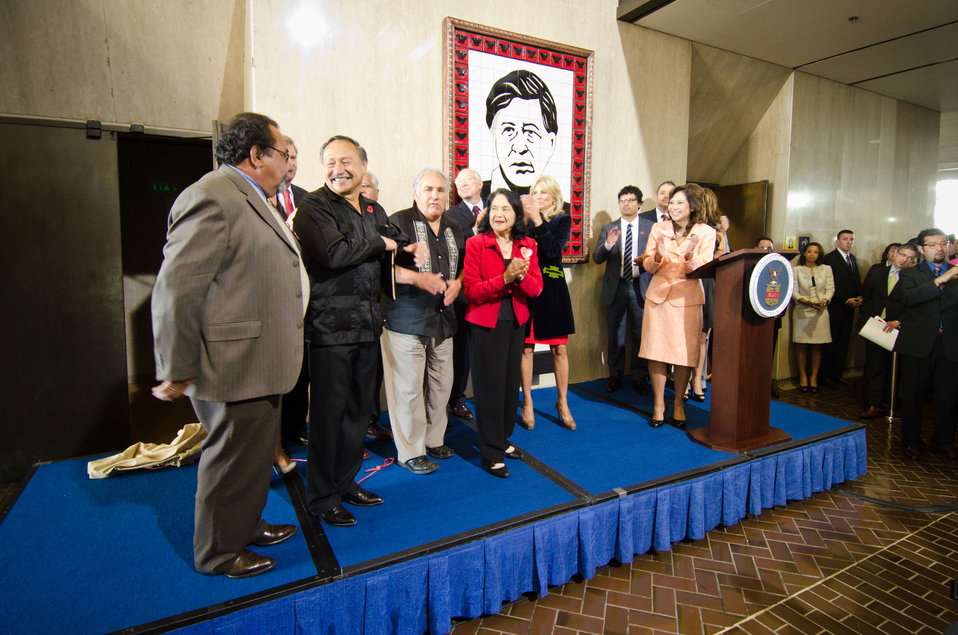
From left: Representative Raul Grijalva, Arizona, Arturo Rodriguez, President, United Farm Workers of America, Reverend Deacon Sal Alvarez, Dolores Huerta, a founding member of the United Farm Workers Union of America, Interior Secretary Ken Salazar, Dr. Jill Biden, Vice President Joe Biden’s wife, Michael Pena, actor and Labor Secretary Hilda Solis during the dedication of the Cesar E. Chavez Memorial Auditorium at the United States Department of Labor in Washington, D.C., Monday, March 26, 2012.